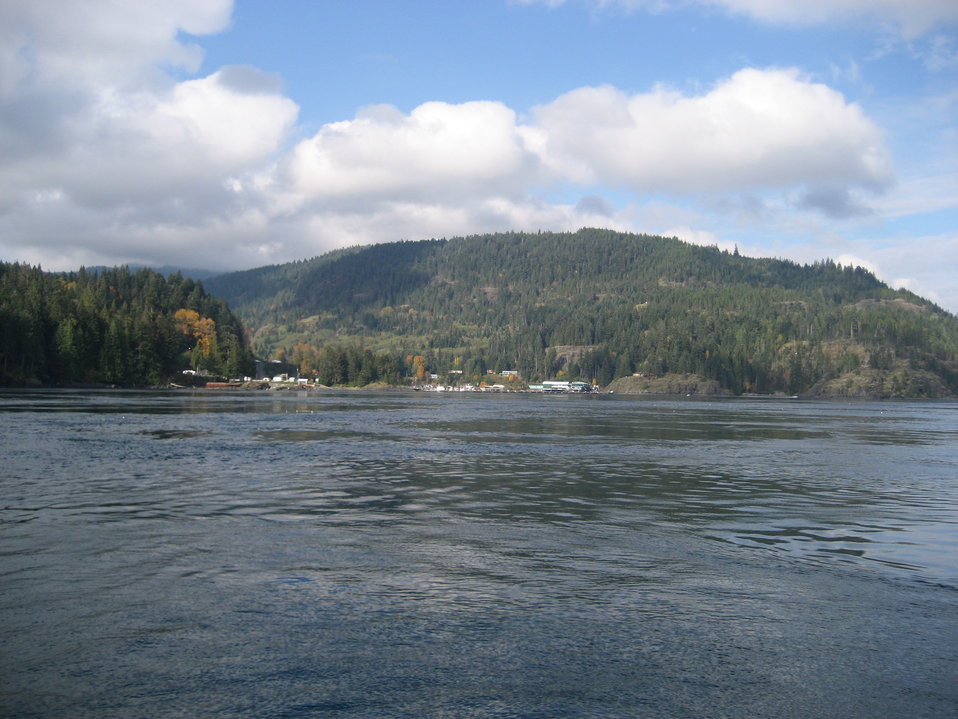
Islands and mountains along the Alaska Peninsula.